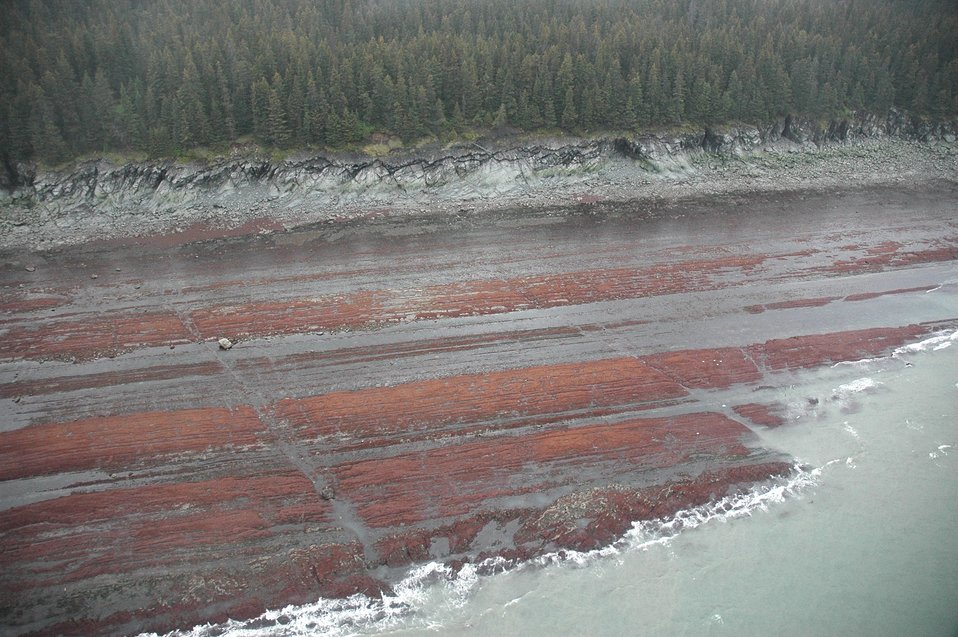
Aerial photograph. Differentially eroded sedimentary layers show linear ridges parallel to the shoreline with tidal channels cutting perpendicular channels. The red is seaweed (algae).